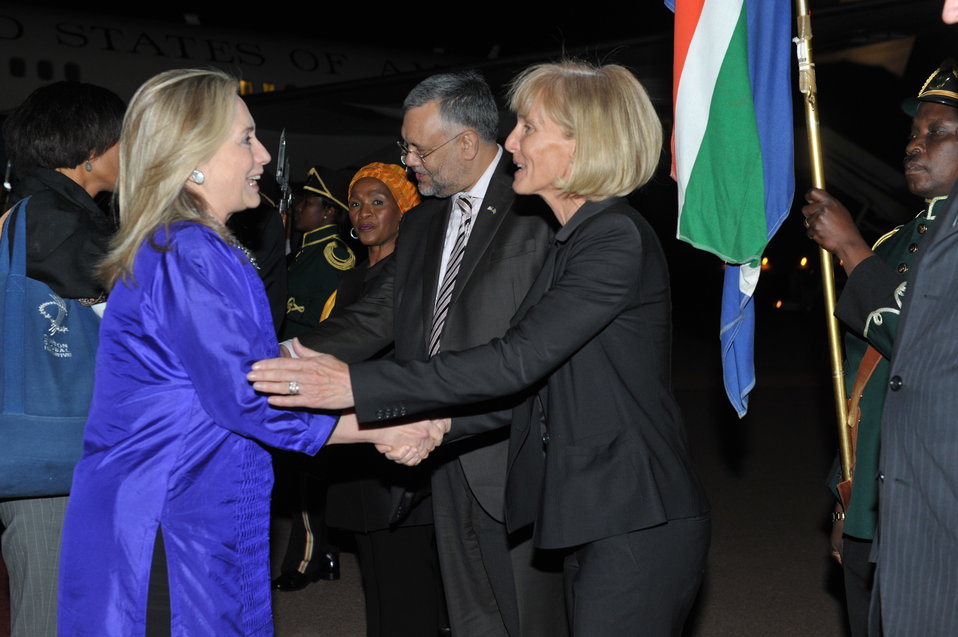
Secretary Clinton Is Greeted By Mrs. Liz Berry Gips

U.S. Secretary of State Hillary Rodham Clinton is greeted by Mrs. Liz Berry Gips, wife of U.S. Ambassador to South Africa Donald Gips, upon her arrival to Johannesburg, South Africa, on August 6, 2012.